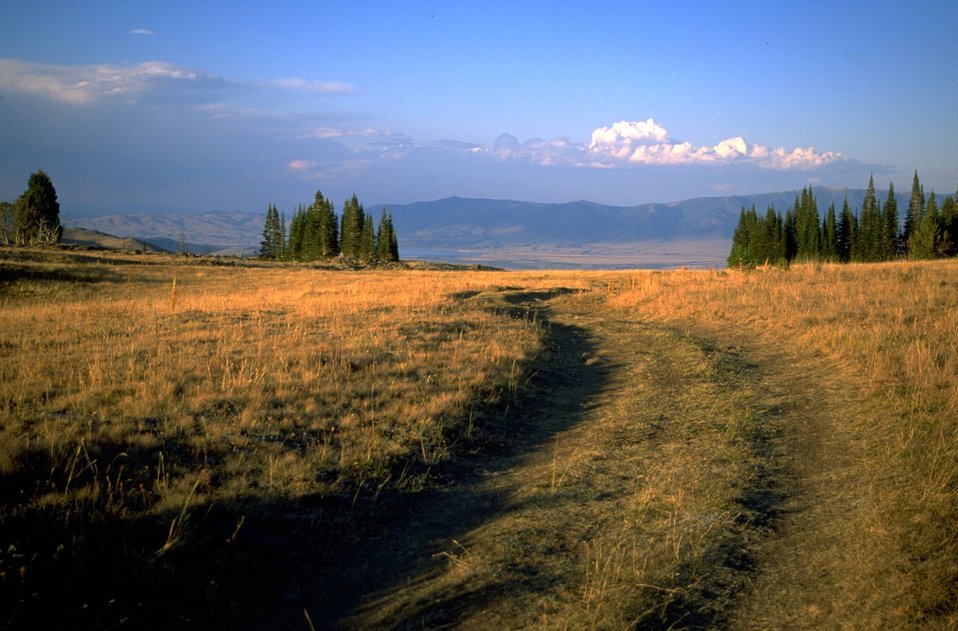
A road through the prairie